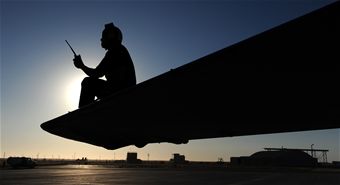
Gunfighter Flag wraps up

Seaman Apprentice Adan Michels, a plane captain with Tactical Electronic Attack Squadron 137 at Whidbey Island Naval Air Station, Wash., radios back to his shop during a pre-flight inspection on an EA-6B Prowler Sept. 24, 2009, during Gunfighter Flag at Mountain Home Air Force Base, Idaho. The EA-6B Prowlers participated as friendly